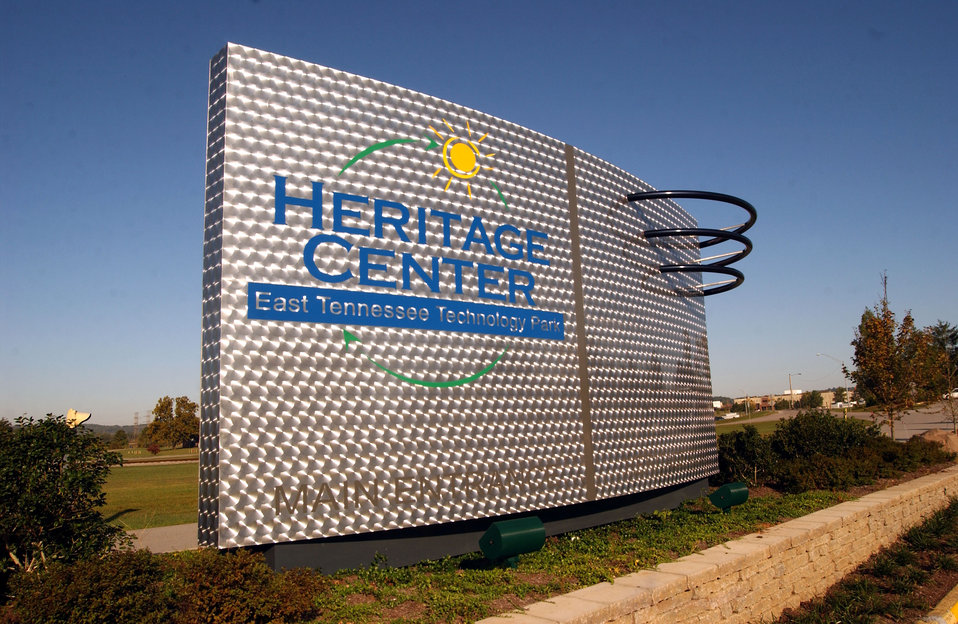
Heritage Center Welcome Signs East Tennessee Technolgy Park

04-259-87 DOE photo by Lynn Freeny

Oak Ridge Tennessee 10-5-2004